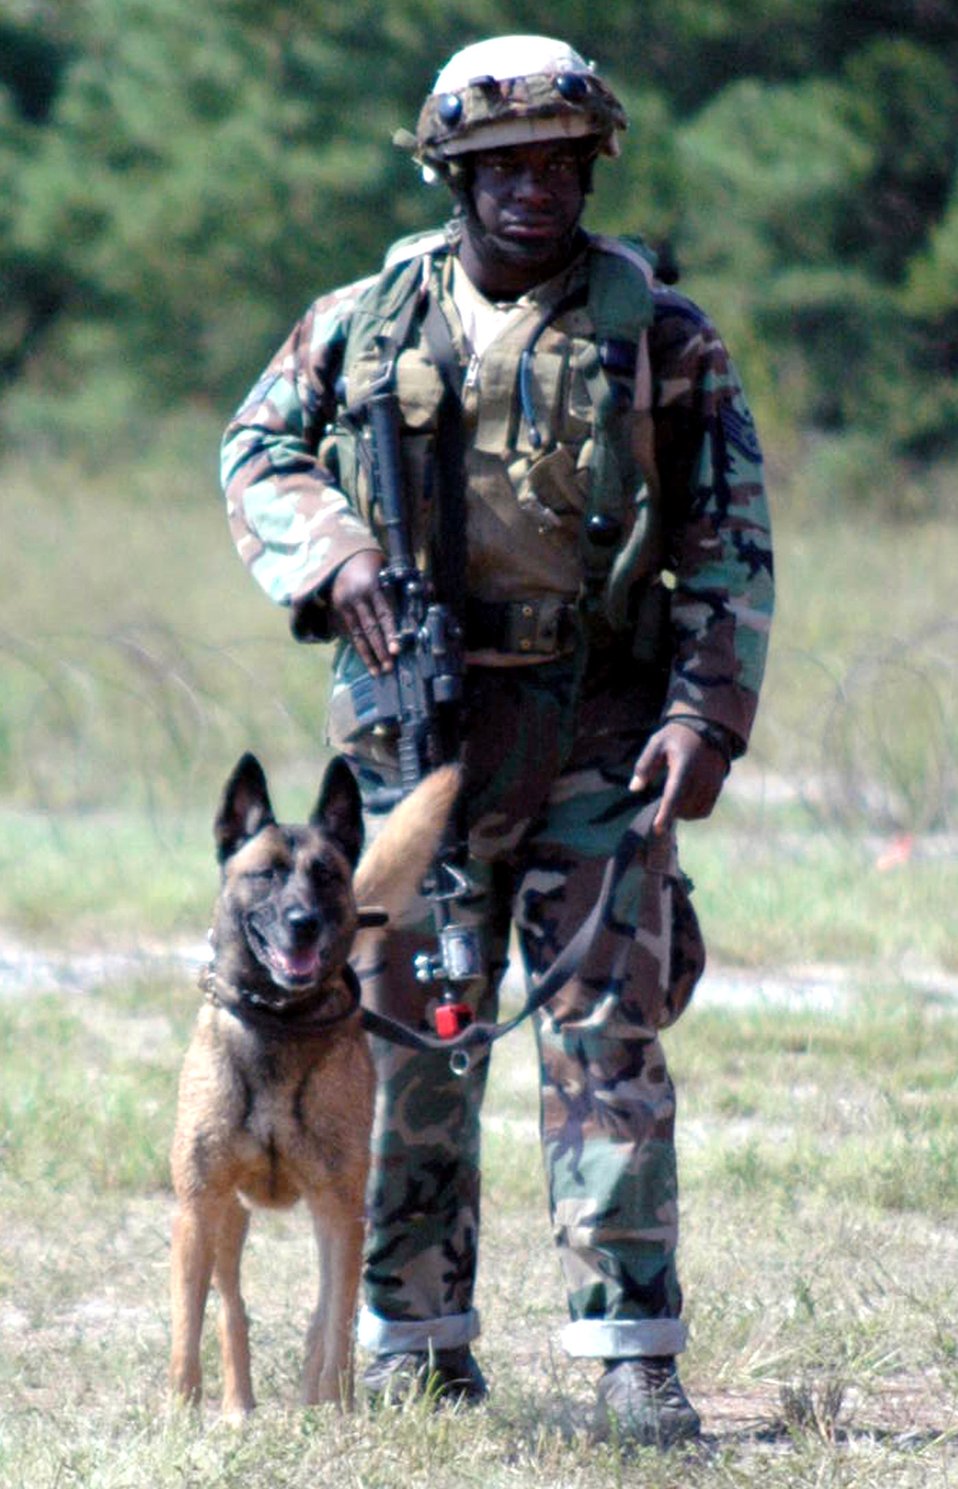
After one year, Phoenix Warrior course soaring high

Staff Sgt. Leonard Moses and his military working dog. Loca, participate in a scenario during Air Force Exercise Eagle Flag 07-6 Aug. 29. They were part of the K-9 track for the Air Force Phoenix Warrior Training Course 07-6. Both Eagle Flag and Phoenix Warrior are operated by the U.S. Air Force Expeditionary Center's 421st Combat Training Squadron at Fort Dix, N.J. Sergeant Moses and Loca are from the 436th Security Forces Squadron at Dover Air Force Base, Del.